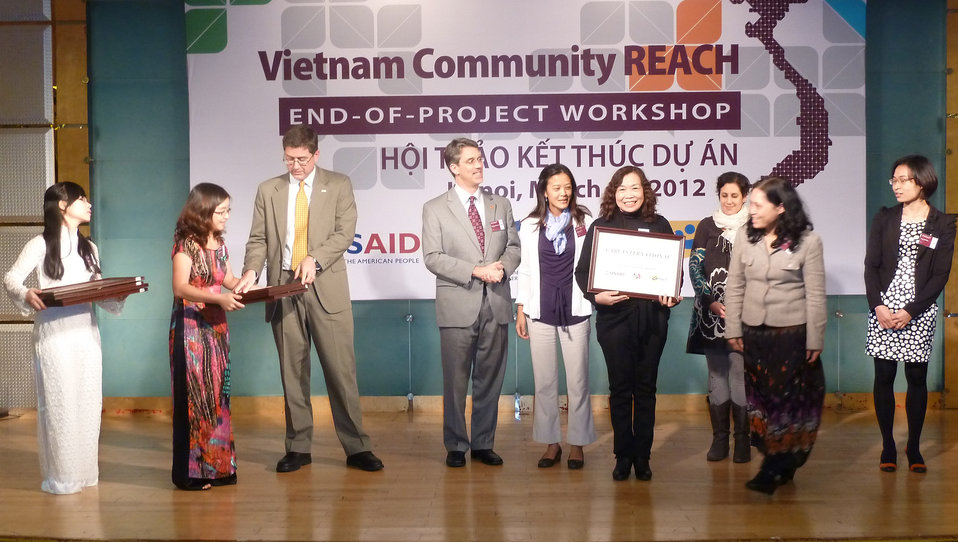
USAID, PEPFAR, and Pact award certificates to local and international partners for their work in addressing HIV in Vietnam

Community REACH project close-out with USAID and implementing partner, Pact